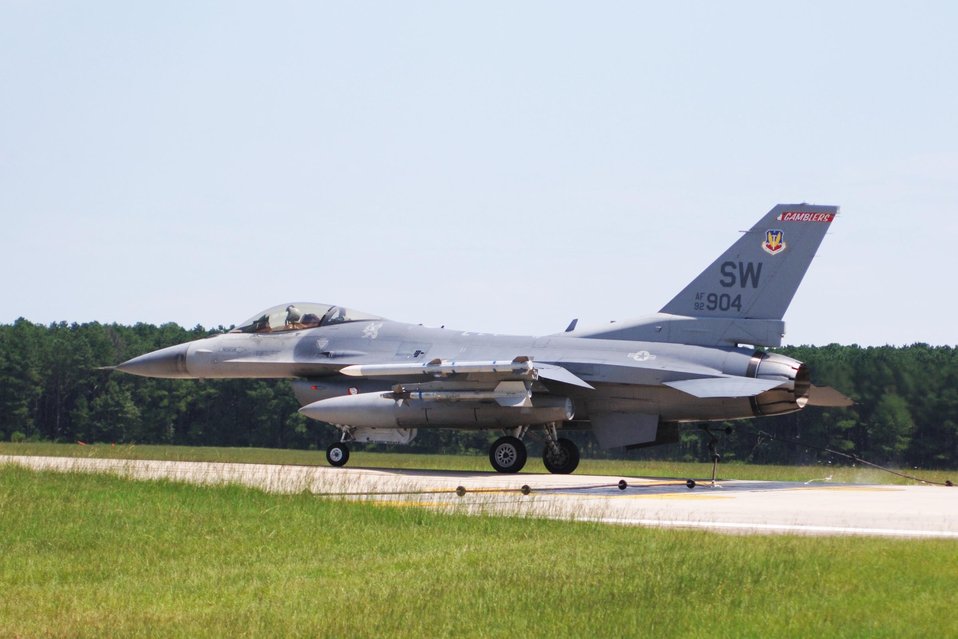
F-16 pilot returns safely following in-flight incident

An F-16 Fighting Falcon from the 79th Fighter Squadron at Shaw Air Force Base, S.C., engages the aircraft barrier Aug. 25 during a barrier certification test. An F-16 from Shaw AFB jettisoned two external fuel tanks during a mechanical malfunction on takeoff at about 1:30 p.m. Sept. 21 on a homeland defense mission.